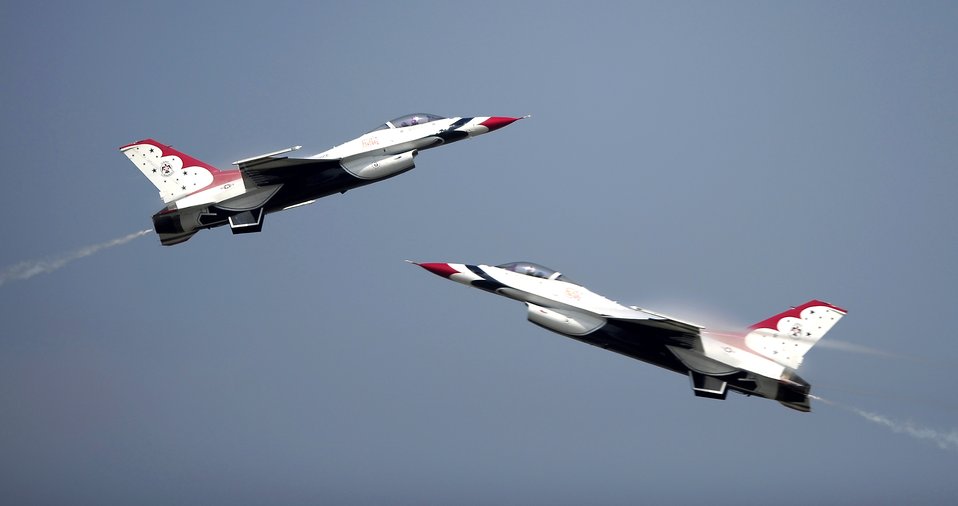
Into the wild blue yonder

The Thunderbirds perform April 9, 2011, during the Charleston Air Expo at Joint Base Charleston S.C.